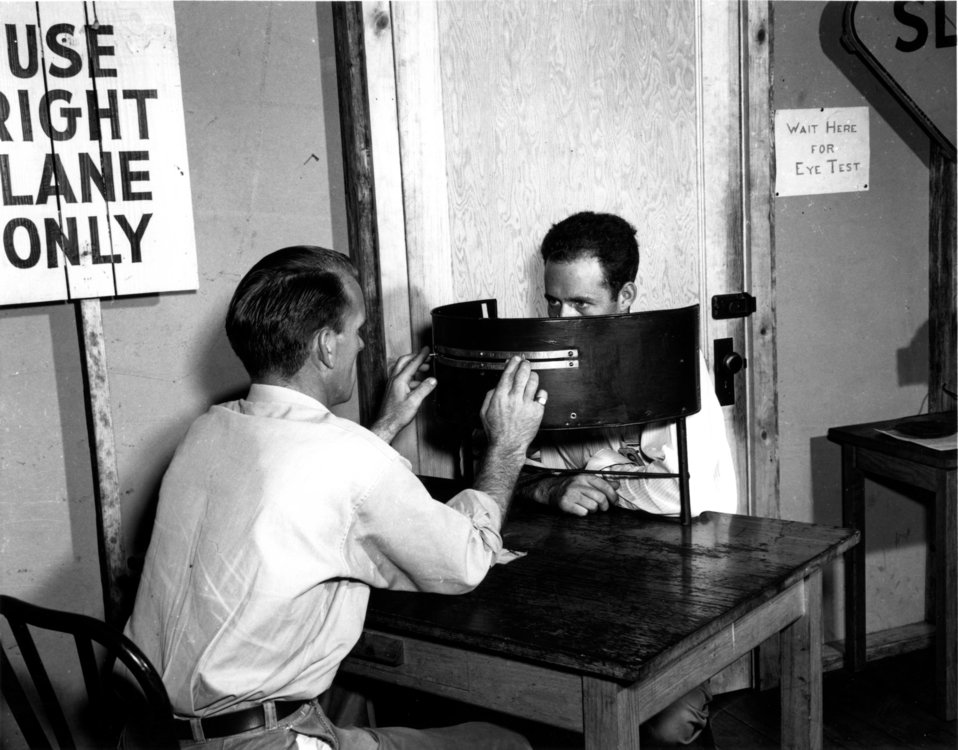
Daily Life at Oak Ridge